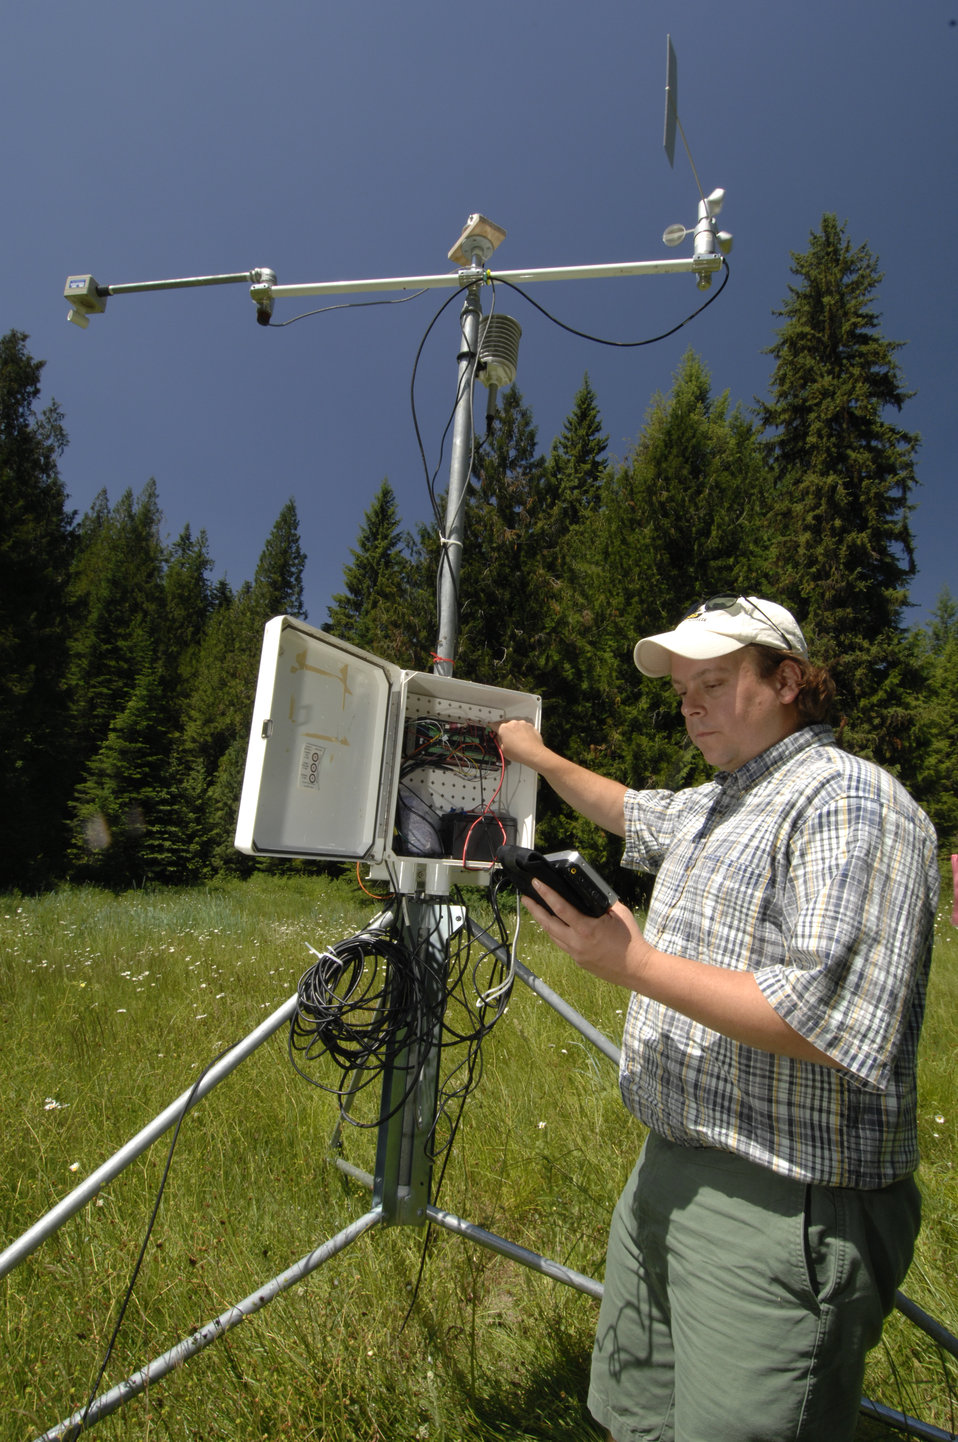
University of Idaho Associate Professor for Hydrology in the College of Natural Resources Dr. Timothy Link tests the hydrometeorological instrumentation used in the University of Idaho Experimental Forest project with funding provided by the U.S. Department of Agriculture's (USDA) Cooperative State Research, Education, and Extension Service (CSREES) near Moscow, Idaho on July 8, 2008. Hydrometeorology is the study of atmospheric water, especially precipitation, as it affects agriculture, water supply, flood control, and power generation. The purpose of this project is to understand the hydrology of discontinuous forests to optimize production of water resources, reduce fire hazard risk, sustain forest health and timber supply, and develop climate change adaptation strategies.